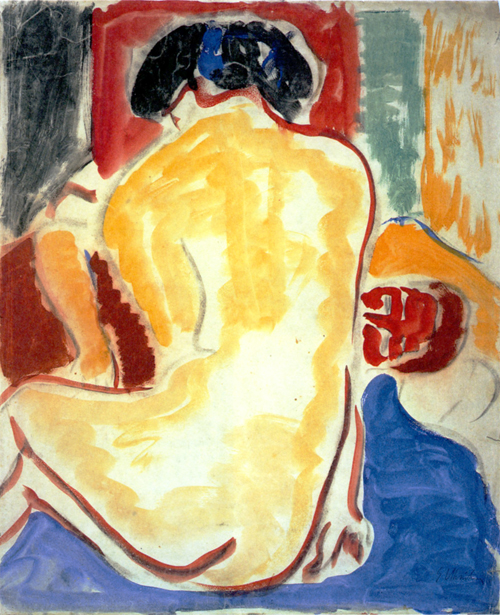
Gelber Rückenakt, 1909, Aquarell; Ulmer Museum, Ulm